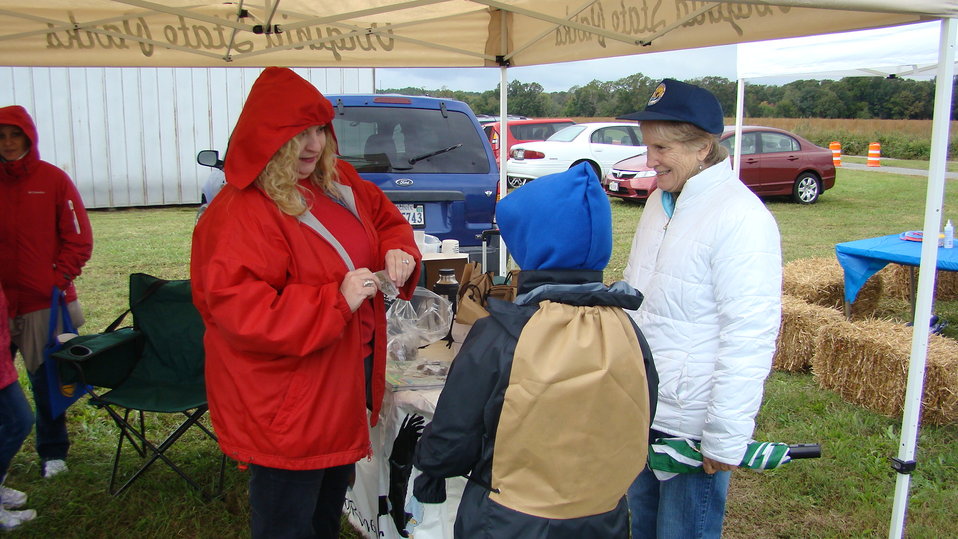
Rappahannock River Valley NWR 15th Anniversary

Virginia Department of Conservation and Recreation presents Scats and Tracks activity for 'Go Wild!' attendees.